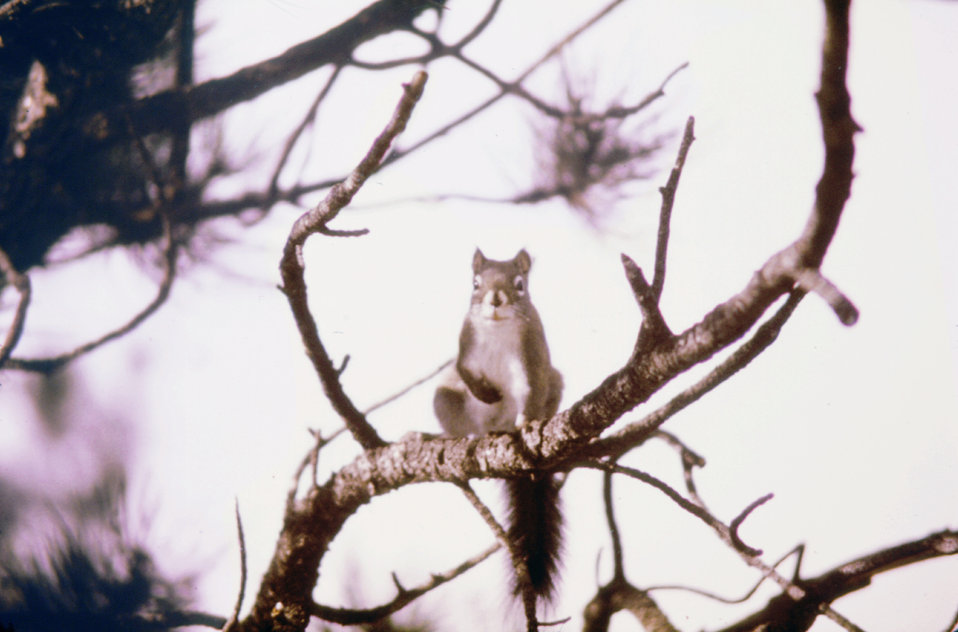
This pine squirrel, Tamiasciurus hudsonicus, is a host to both fleas and ticks.